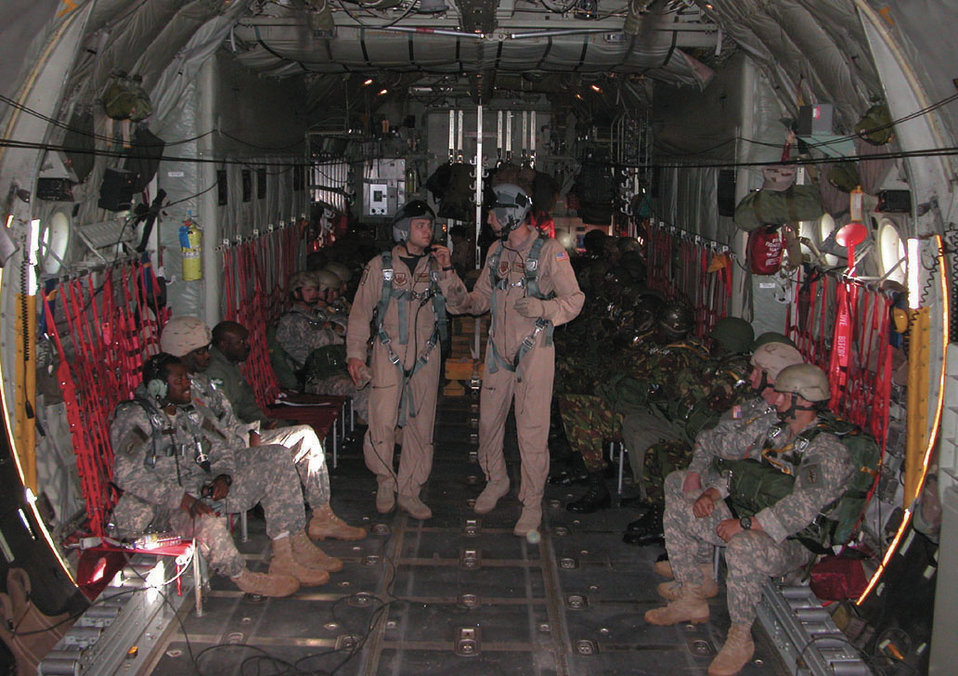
Airmen join Soldiers taking Kenya military to new heights

KENYA -- (Standing from left) Senior Airman Jon Kukielka and Tech. Sgt. Eric Wielinga confer on final airdrop procedures before opening cargo doors in the C-130 Hercules on June 6. The airdrops lasted three days and included 14 separate drops of U.S. and Kenyan Army paratroopers. The Airmen are loadmasters with the 746th Expeditionary Airlift Squadron at a forward-deployed location.